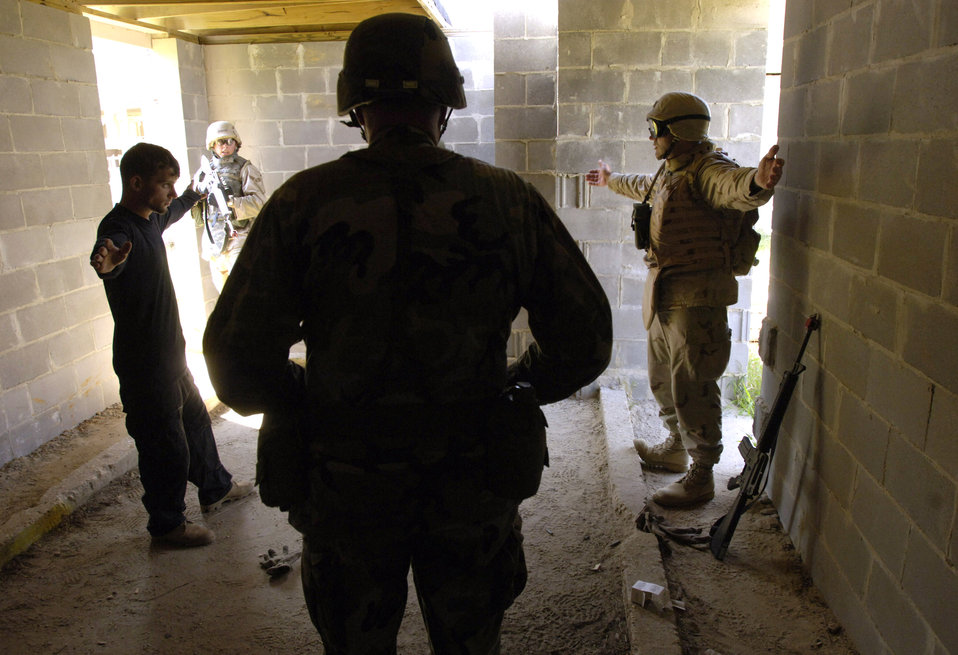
Air Force trains to fill Army deployments

Capt. John Clark (right) and Senior Amn. Jeremy Hofstetter prepare to conduct a search of a